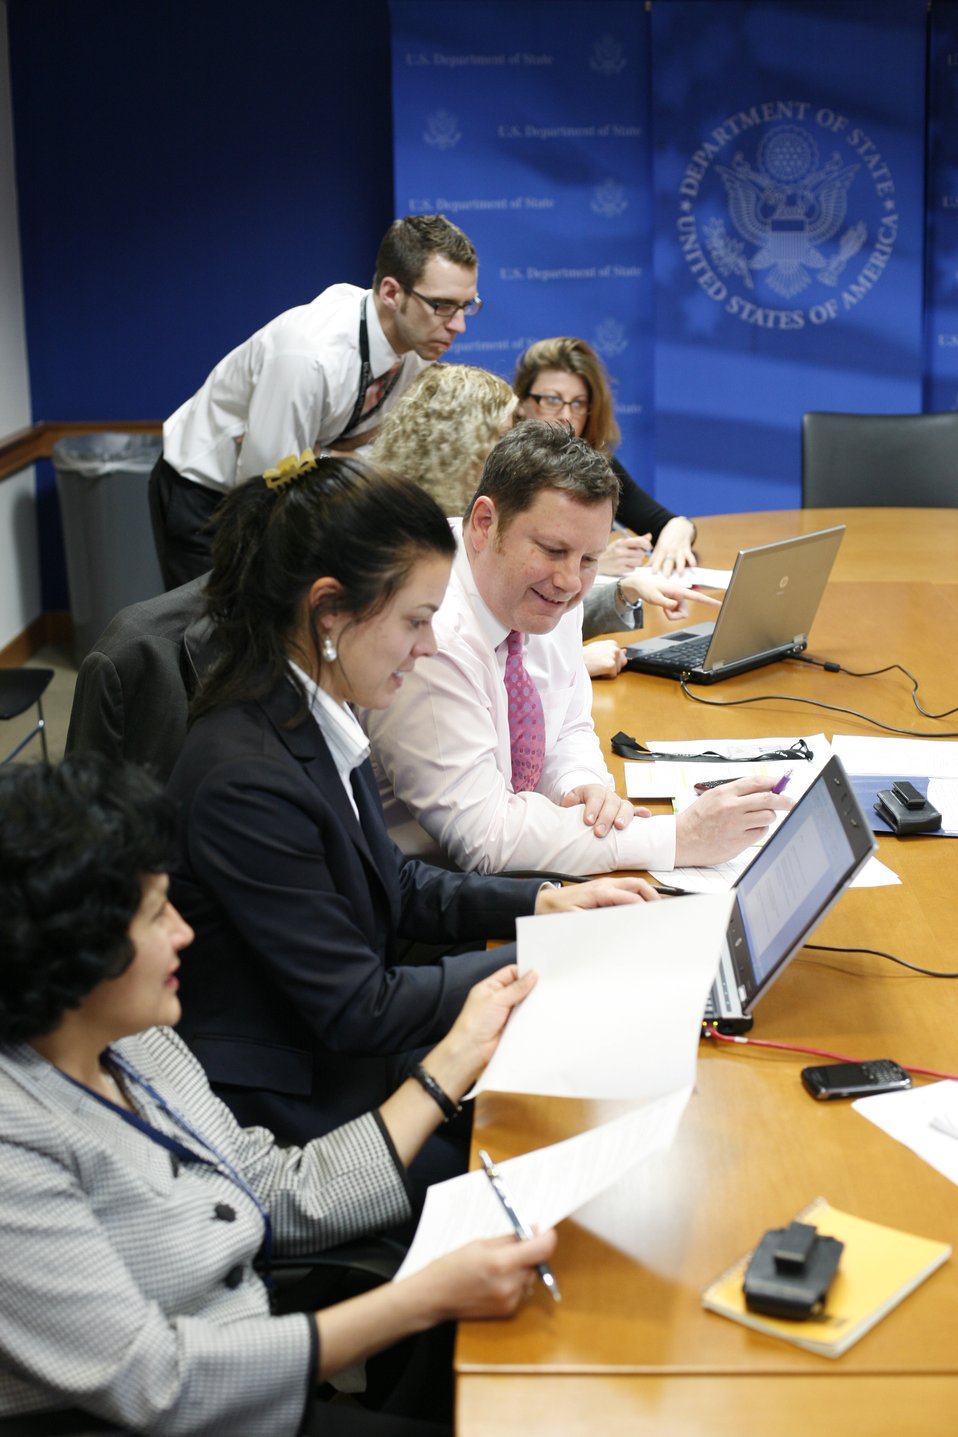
Acting Assistant Secretary Hammer Responds to #AskMike Questions

Acting Assistant Secretary of State for Public Affairs Mike Hammer, center; responds to #AskMike questions from the Department’s official Spanish Twitter feed, @USAenEspanol, on January 24, 2012. Also pictured: Deputy Assistant Secretary of State for Western Hemisphere Affairs Fabiola Rodriguez-Ciampoli, left; Director of the Office of International Media Engagement Abigail Dressel, second from left; Public Affairs Specialist Sarah Goldfarb, third from right; Specialist Assistant Mireille Zieseniss, second from right; and Acting Director of Digital Communications Center Ed Dunn, right.